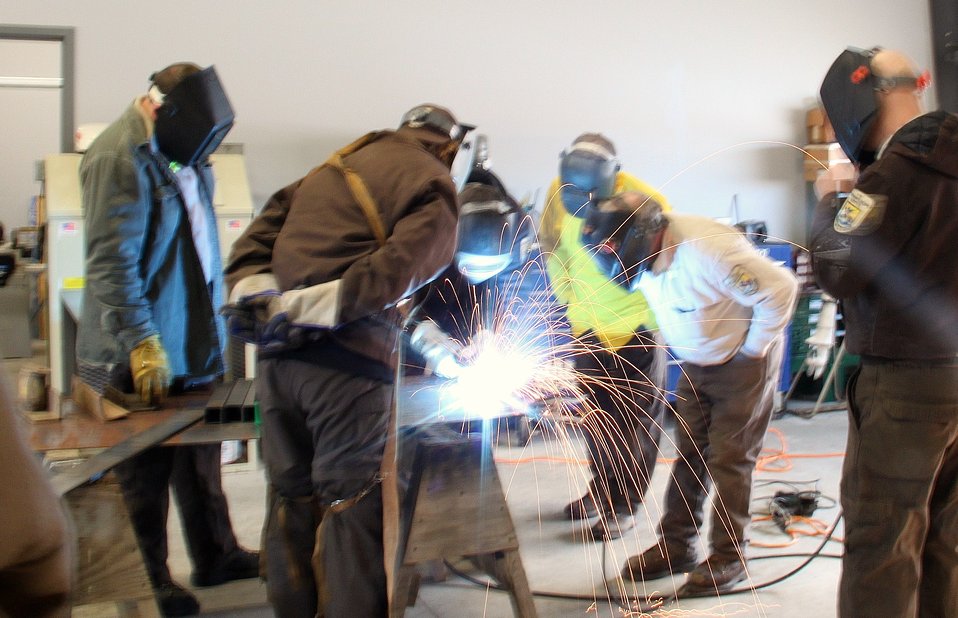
Joe Bertrand teaches welding

Joe Bertrand, Maintenance Mechanic at Missisquoi NWR instructs employees of the Lake Champlain Fisheries Office on the finer points of welding.